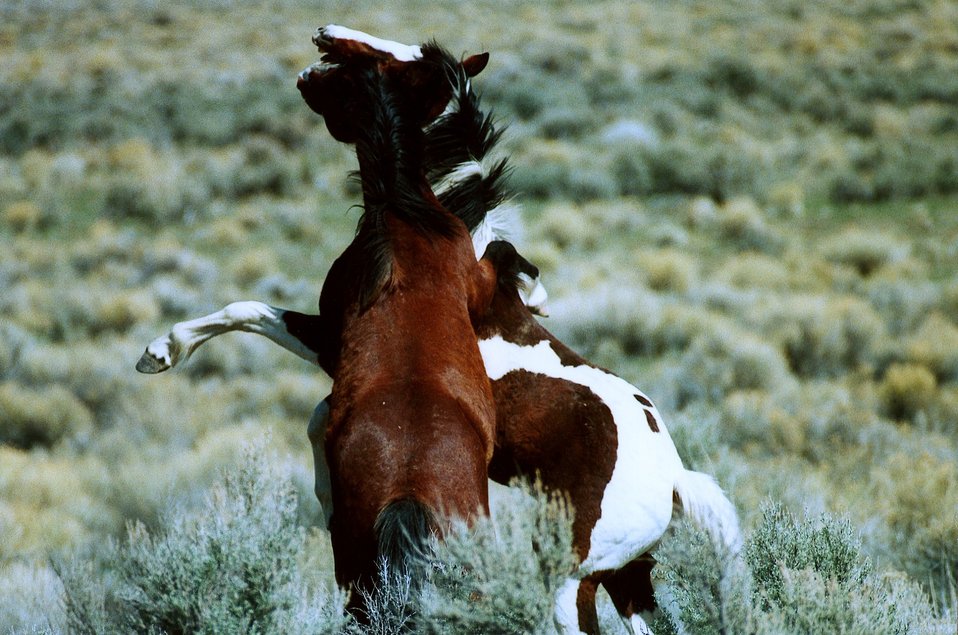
Two wild bachelor stallions playing.